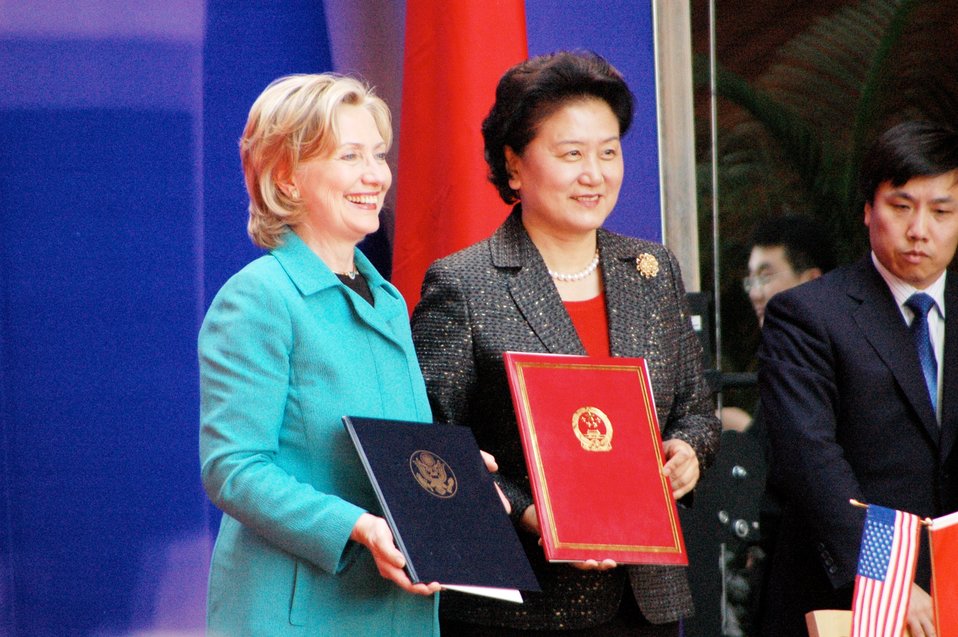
Secretary Clinton and Chinese State Councilor Liu Yandong Smile for the Cameras

U.S. Secretary of State Hillary Rodham Clinton and Chinese State Councilor Liu Yandong pose for photos after signing the U.S.-China Consultation on People-to-People Exchange agreement at the National Center for the Performing Arts in Beijing, China, May 25, 2010.